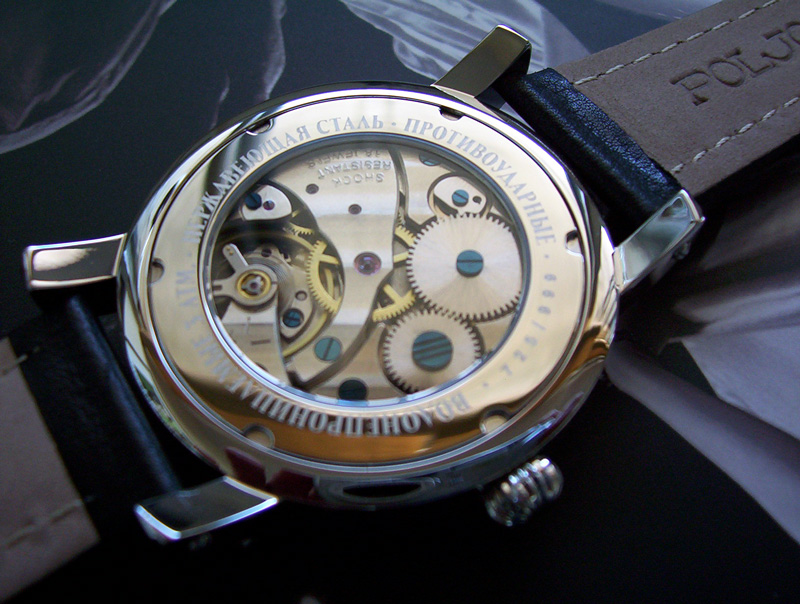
Watch movement